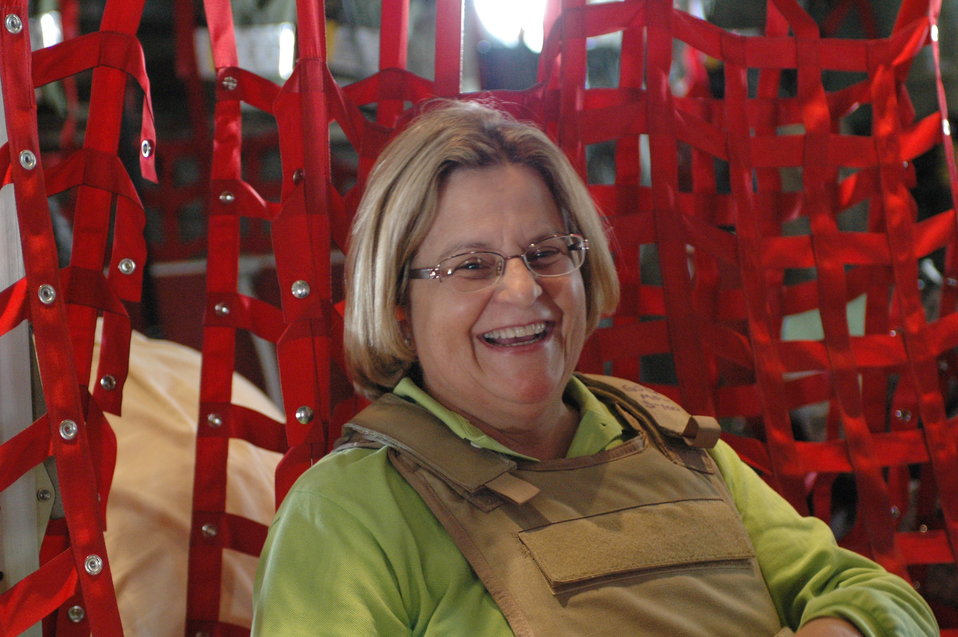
CODEL Berman